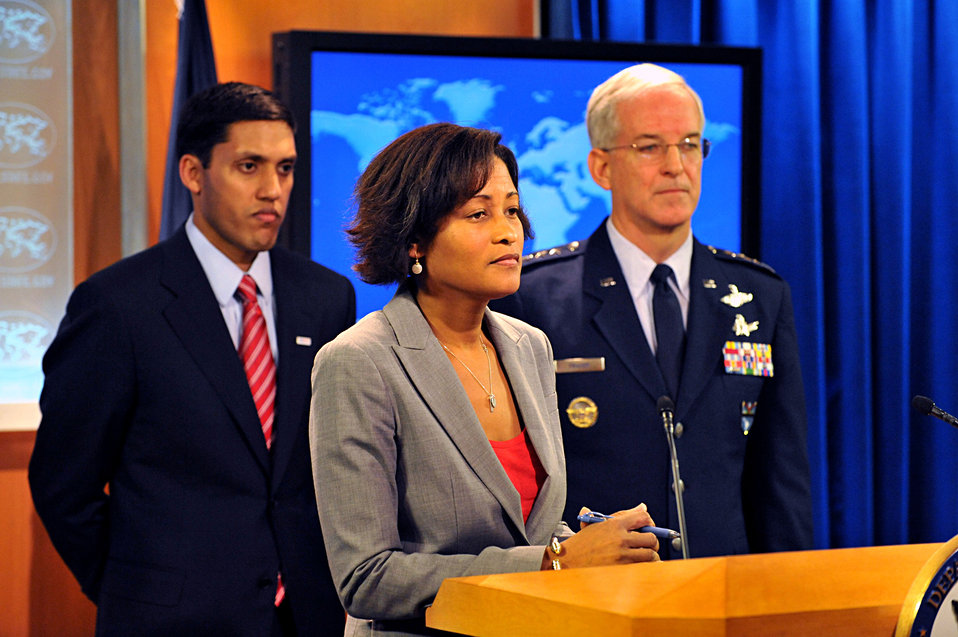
State Department Counselor Cheryl Mills at Special Briefing on Haiti

State Department Counselor Cheryl Mills delivers remarks on the situation in Haiti during special briefing at the State Department, Washington, January 13, 2010. USAID Administrator Raj Shah and U.S. SOUTHCOM Commander General Douglas Fraser stand behind her.